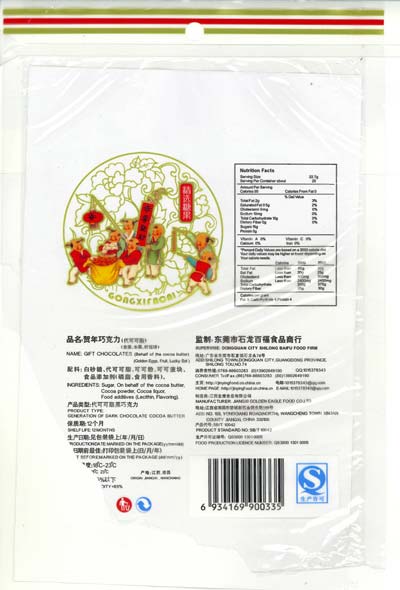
RECALLED – Gong xifacai gift chocolates

June 17, 2014 – Domega NY International Co Ltd Issues Allergy Alert On Undeclared Peanuts And Milk In Gong Xifacai Gift Chocolates.